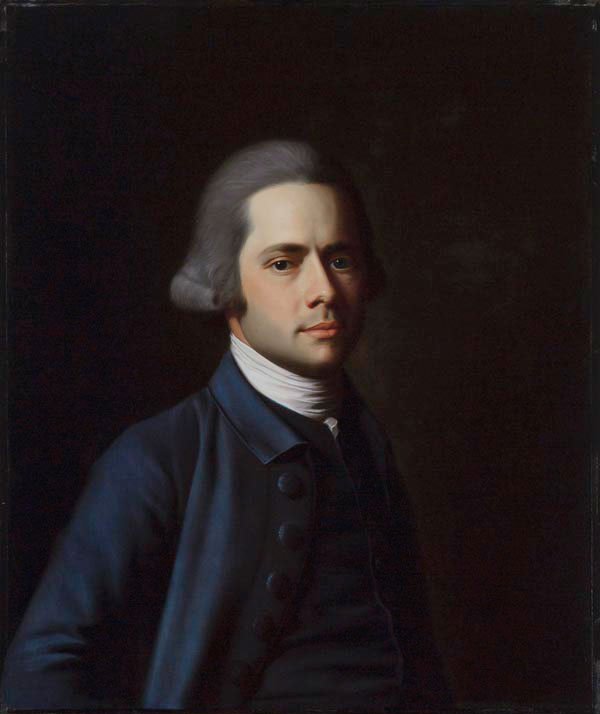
Portrait of a Man in a Blue Coat, oil on canvas painting by John Singleton Copley, 1770, San Antonio Museum of Art